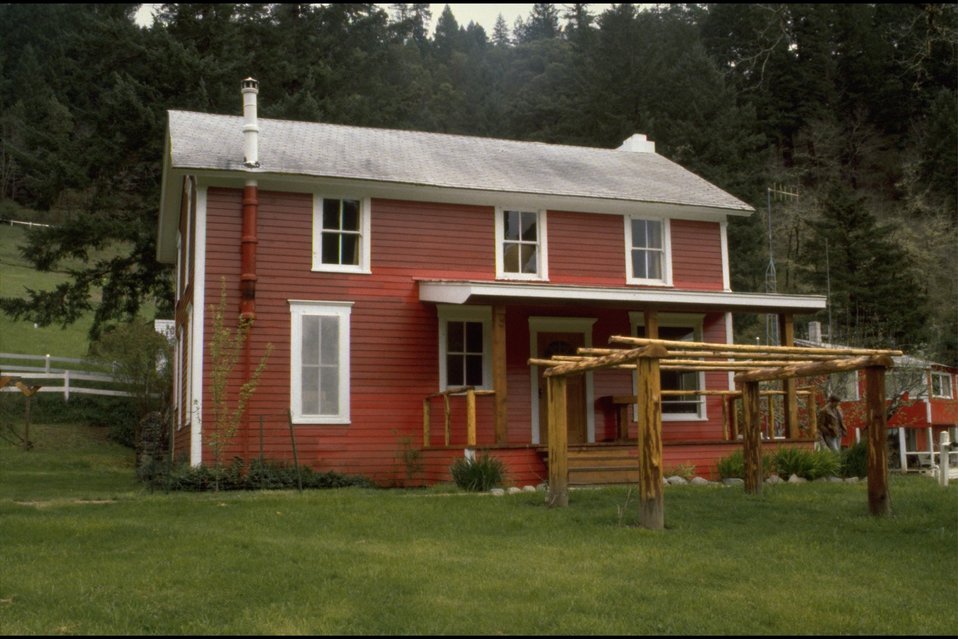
Rogue River Ranch - view of Main House/Museum.